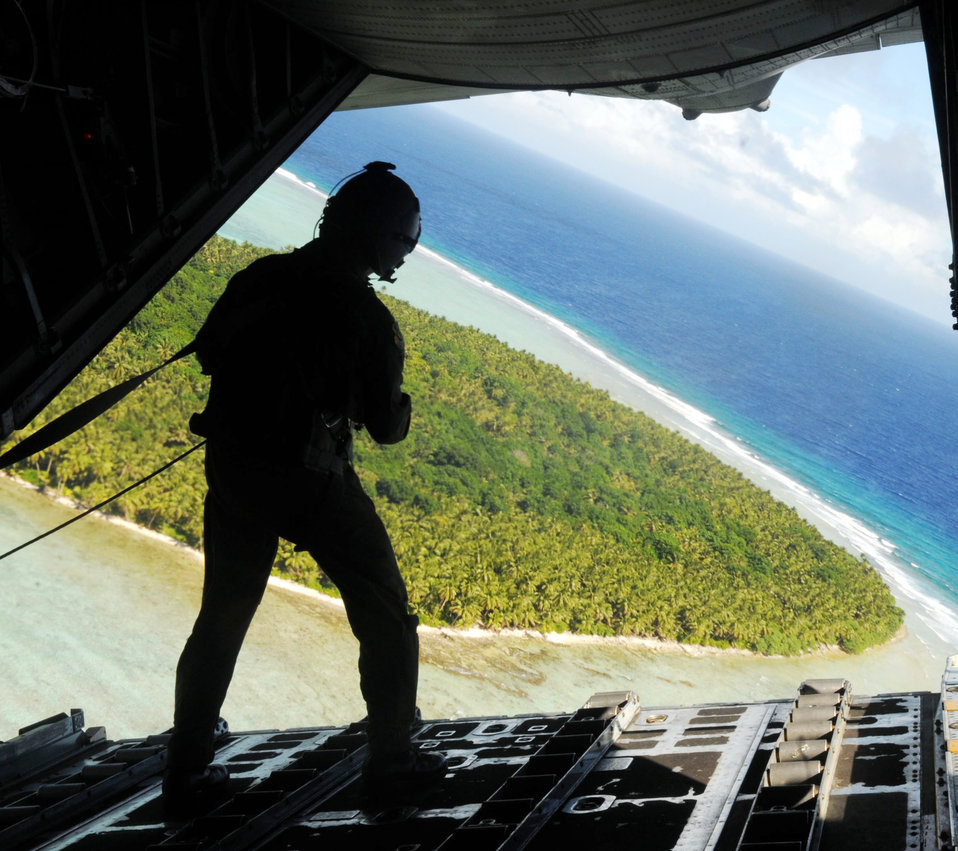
Airmen drop donated goods to islanders

Staff Sgt. Cravenkeo Khamone, a 36th Airlift Squadron loadmaster, spots the drop location for a box of donated goods going to the Chuuk Islands Dec. 16, 2009, in support of Operation Christmas Drop. The operation, which began in 1952, is celebrating its 57th anniversary of helping people. Airmen today continue the tradition delivering supplies to remote islands of the Northern Mariana Islands.